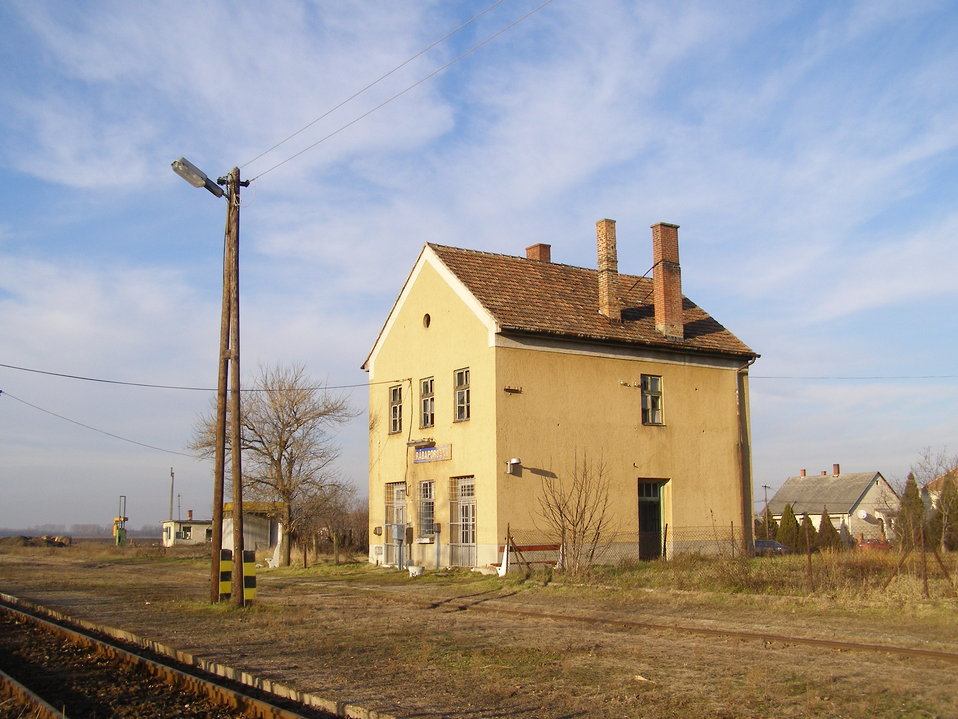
Magyar: Rábapordány, vasútállomás